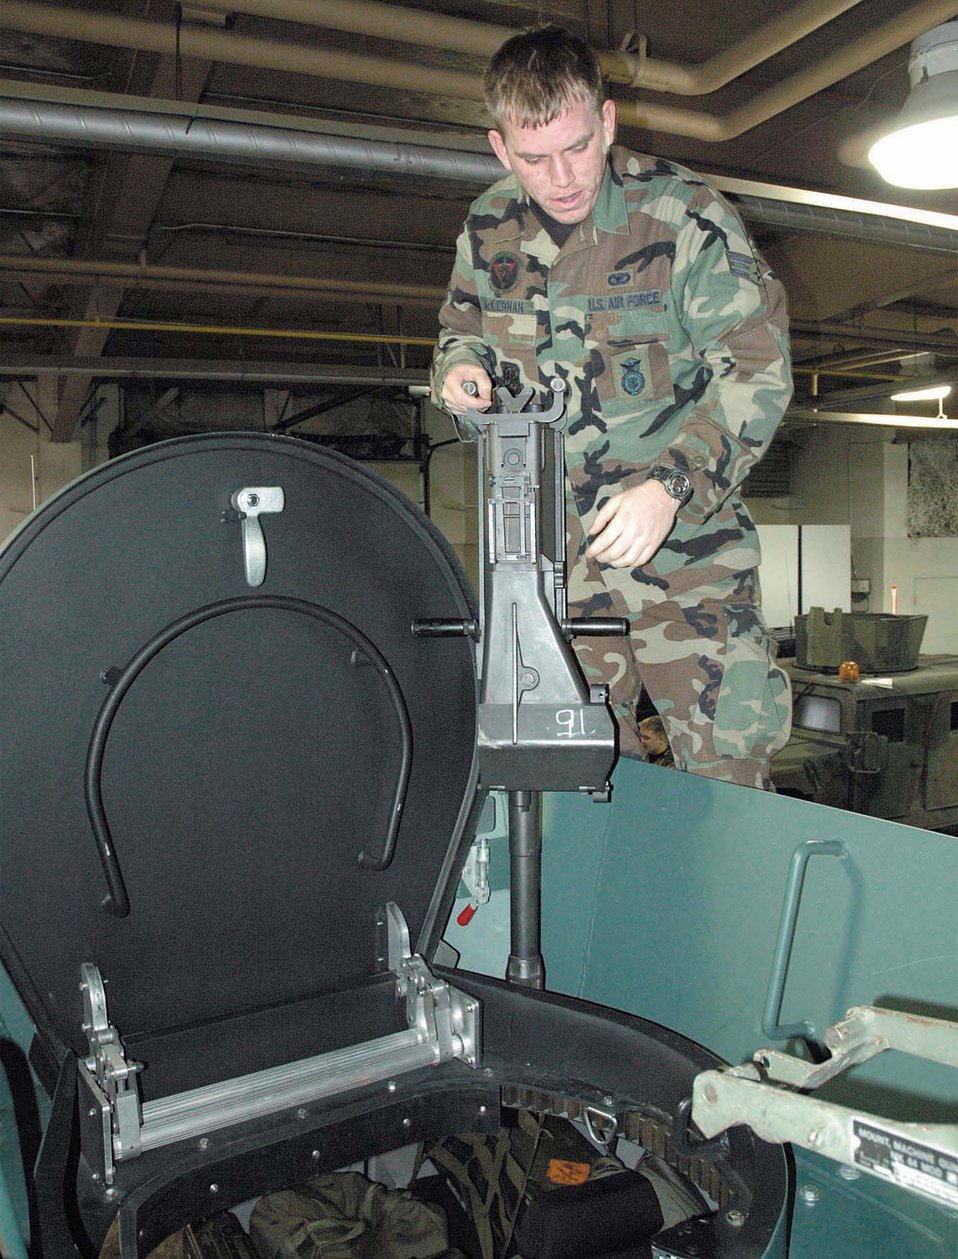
Airmen test new security forces vehicle

MINOT AIR FORCE BASE, N.D. -- Senior Airman Kevin McKiernan prepares to load a grenade launcher onto the Lenco Bearcat turret here Jan. 18. The vehicle is a test vehicle that may one day replace Humvees at places like Minot. Airman McKiernan is assigned to the 791st Missile Security Forces Squadron.